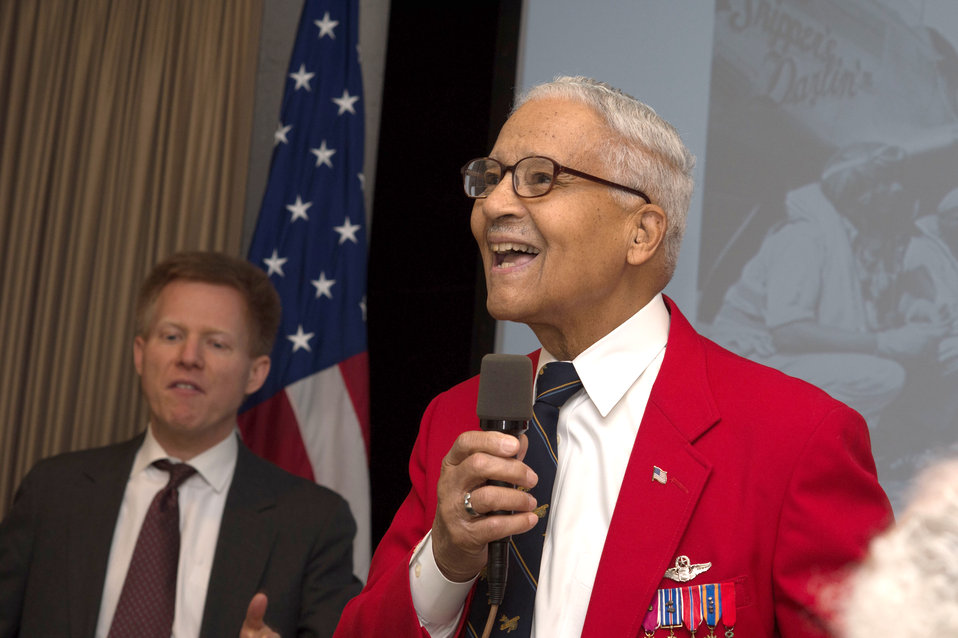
Pilot and Tuskegee Airman, Colonel Charles Edward McGee, U.S. Air Force (USAF) ret. speaks at the U.S. Department of Agriculture's (USDA) Office of the Assistant Secretary for Civil Rights (OASCR) program “In conversation With Tuskegee Airmen”, which honored the airmen’s successes both overseas and at home at USDA in Washington, D.C. on Thursday Mar. 27, 2014. Col. McGee spoke about his experiences in the Army Air Corp (later the Army Air Force and U.S.Air Force). Questions from the audience provided several opportunities for discussion about civil rights challenges and how they achieved success and respect.